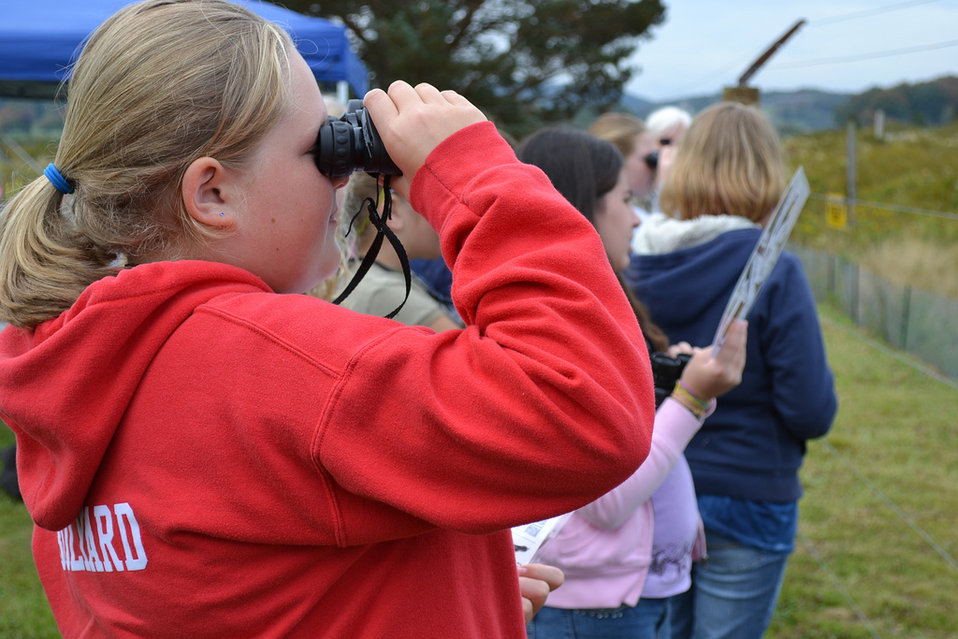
Youth Birders at Wild School event

Young birders at Canaan Valley NWR's annual Wild School test their identification skills while birding.